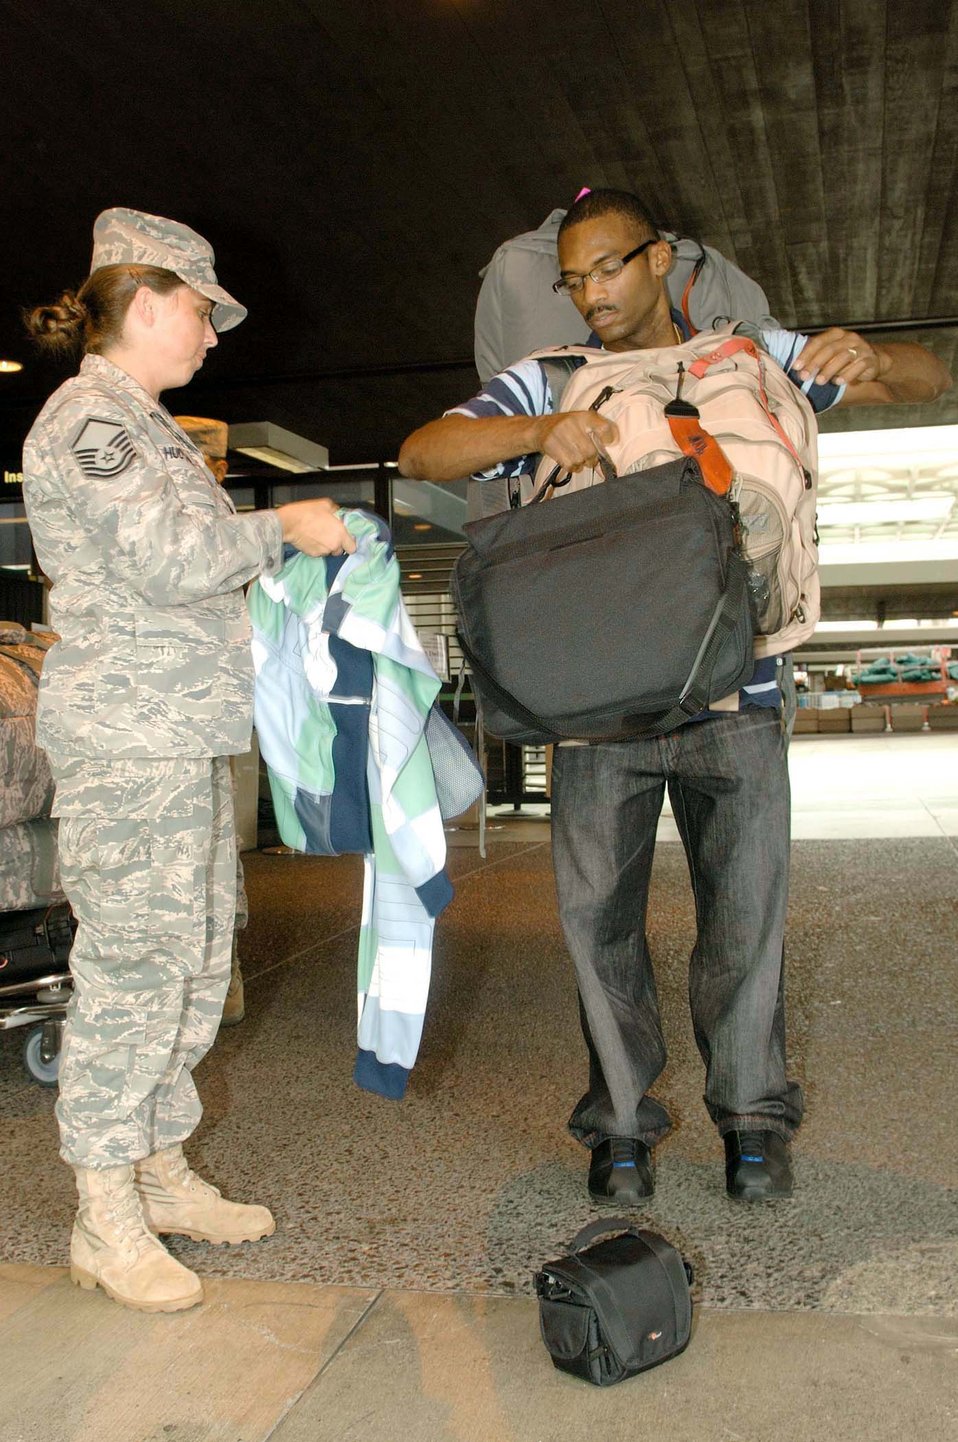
Hickam Airmen deploy to Afghanistan

Master Sgt. Janet Hudson helps Tech. Sgt. Dedric Brown with his gear prior to leaving for his deployment July 31 at Honolulu International Airport in Hawaii. Sergeant Brown is one of 54 reservists from the 624th Civil Engineer Squadron being mobilized to deploy to Afghanistan. Sergeant Hudson is assigned to the 624th Regional Support Group Family Support Flight, and Sergeant Brown is a 624th CES member.